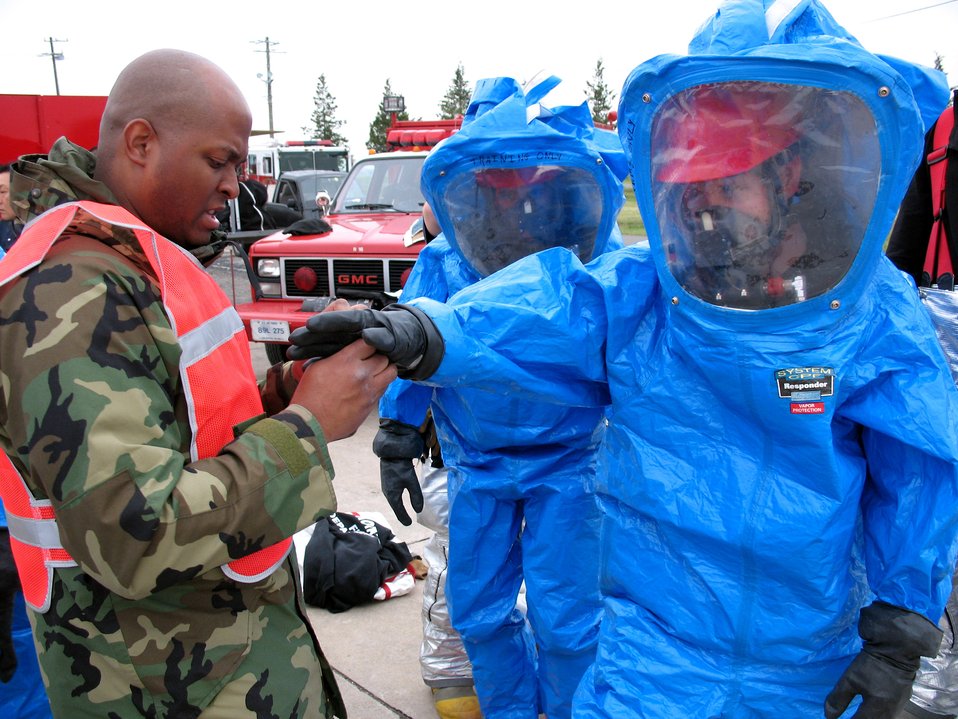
Yokota's Hazmat team gears up for training

Firefighters help Hazmat entry team members suit up during an in-house exercise April 30 at Yokota Air Base, Japan. The exercise was a refresher for team veterans, but for three of the entry team members it was the final requirement to achieve technician level